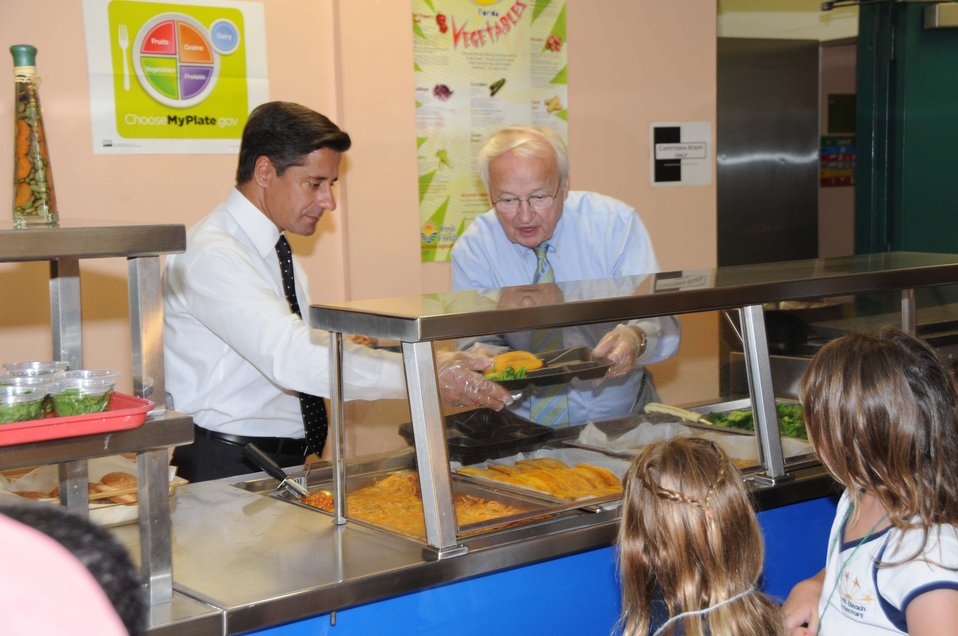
Under Secretary serves lunch

U.S. Department of Agriculture (USDA) Under Secretary for Food, Nutrition and Consumer Services Kevin Concannon (right), and Miami-Dade County School Superintendent Alberto Carvalho serve lunch to students at North Beach Elementary School in Miami, FL on Aug. 23, 2012. North Beach Elementary School was one the 177 schools in the Miami-Dade County Public Schools District to achieve a Bronze Award in the Healthier US School Challenge (HUSSC). HUSSC is a key part of the First Lady’s Let’s Move! initiative to end childhood obesity in a generation. The Challenge is a voluntary commitment to meet USDA’s rigorous standards for physical activity, nutritious meals and nutrition education.